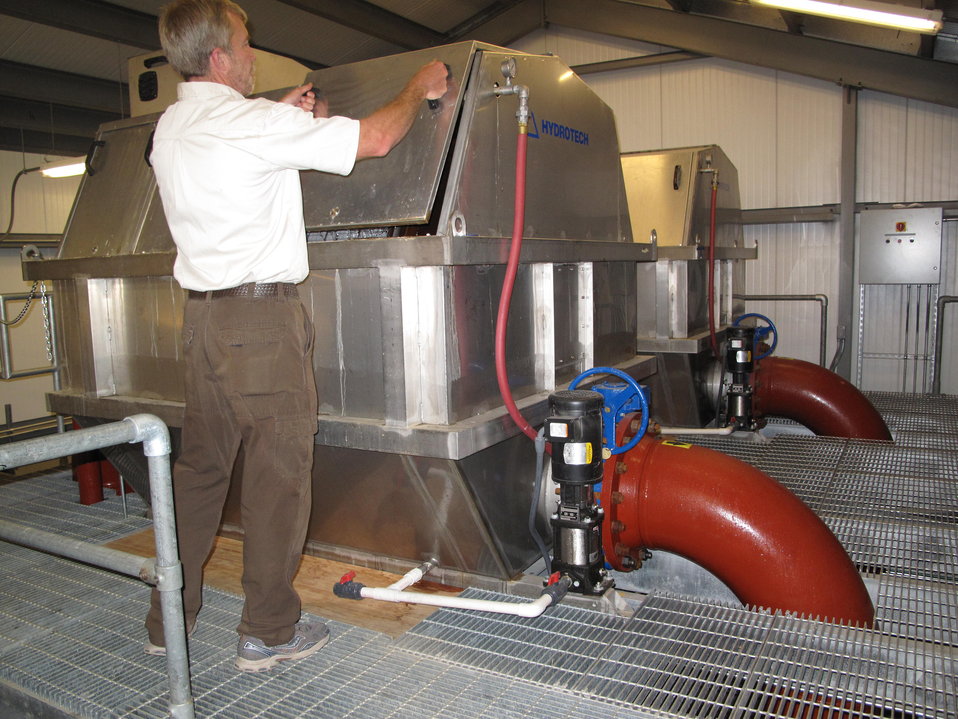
Leadville National Fish Hatchery

A portion of the impressive filtration system.